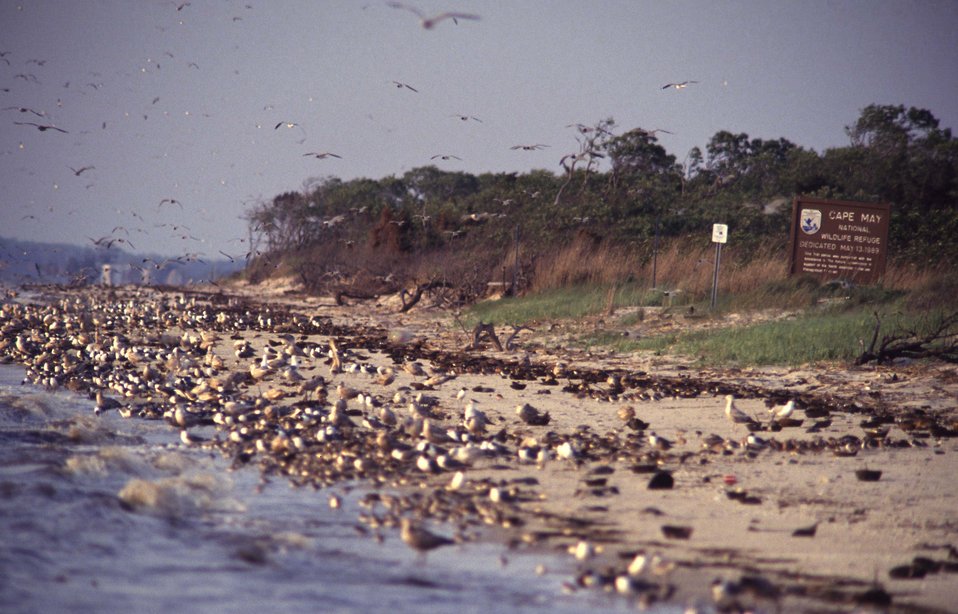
Norbury's Landing

Cape May National Wildlife Refuge, NJ.